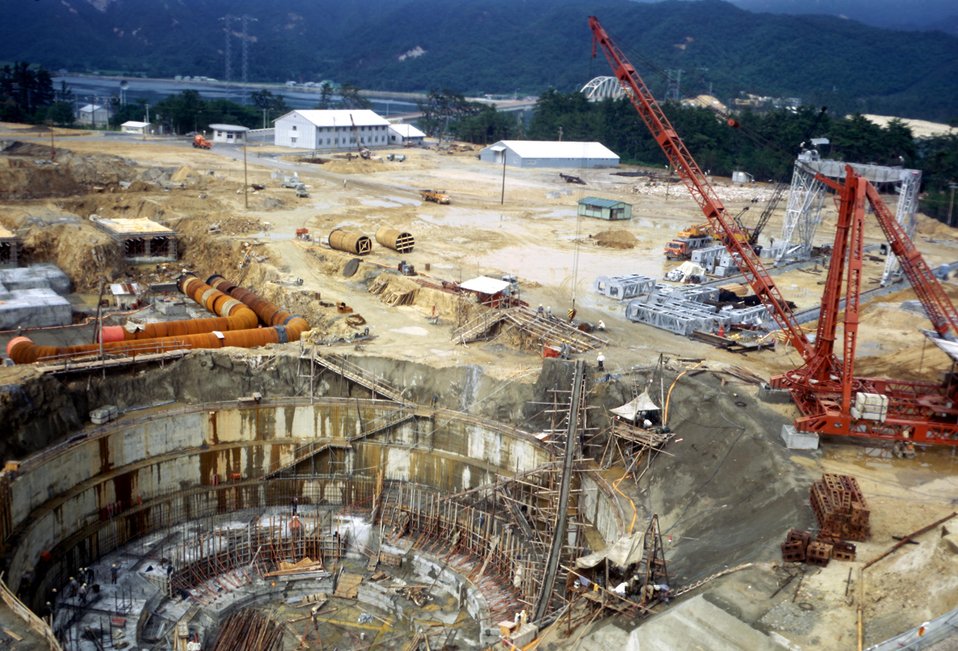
Japan, #1, Mihama. Construction of Kansai Elec. Co. 345MW Westinghouse Pwr. at Mihama, Japan. c. 1967